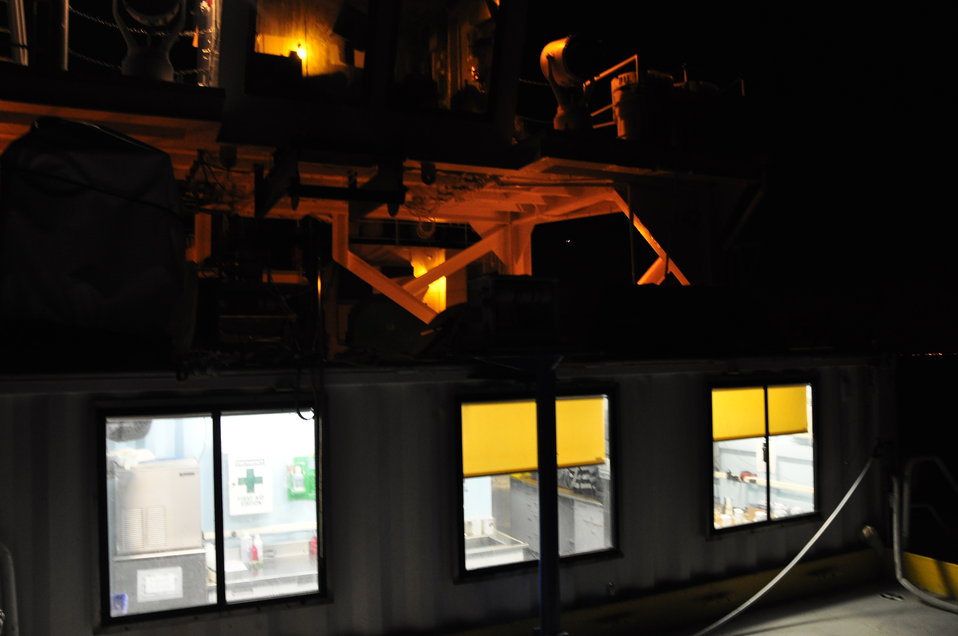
July 2009, Night view of the wet lab from the back deck

They call it the wet lab because it's truly hard to stay dry this close to where they bring in water and mud grab samples. There is also a dry lab and commputer lab onboard.